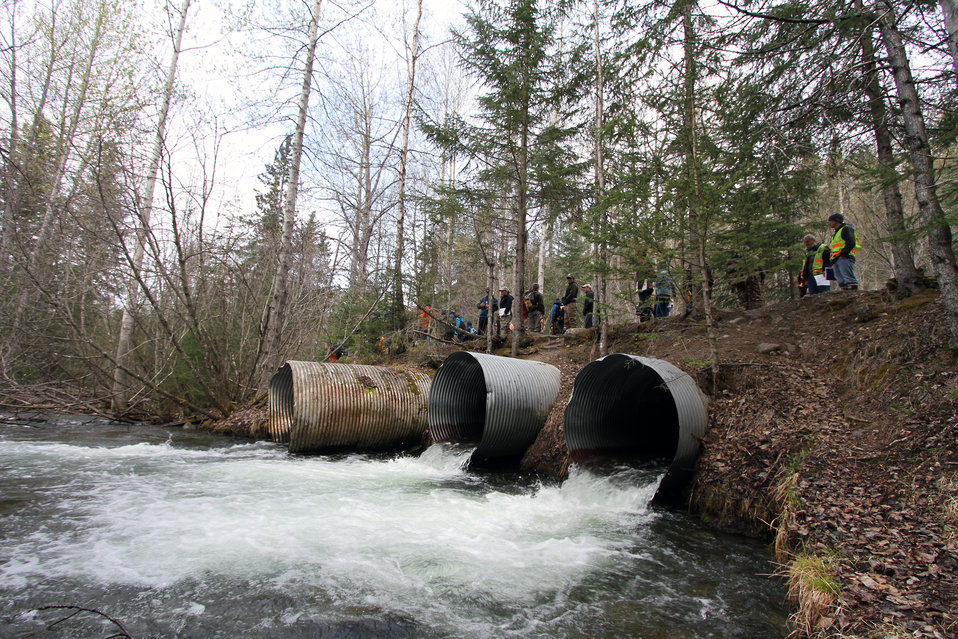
Fish Passage Workshop May 2014

A fish passage barrier on Indian Creek. Workshop hosts/organizers included the U.S. Forest Service, U.S. Fish and Wildlife Service, and the Alaska Department of Fish and Game. USFWS/Katrina Mueller